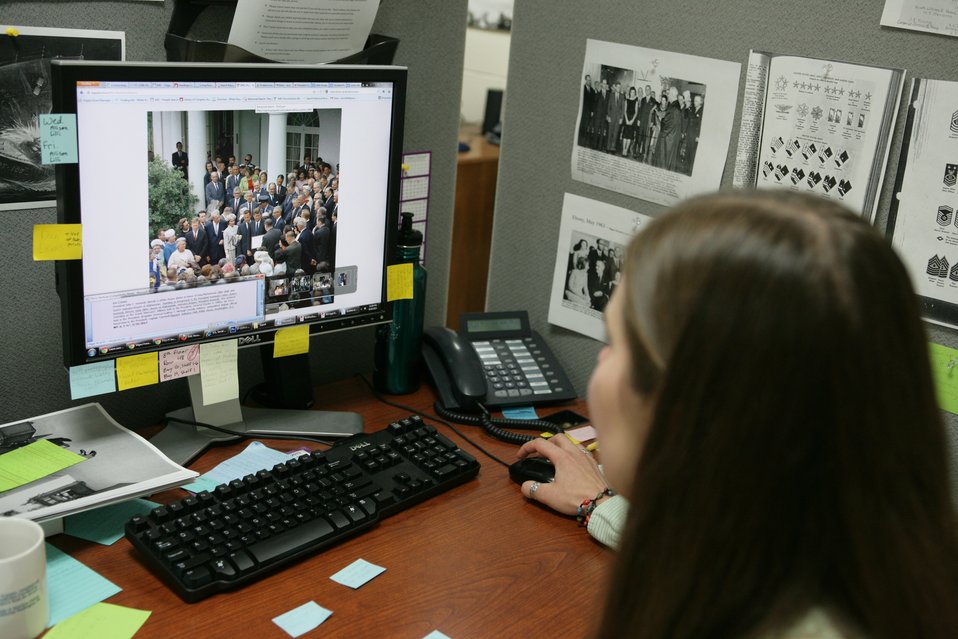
Audiovisual Metadata Cataloger Lindsay Closterman (JFK Library Foundation) works on describing a digitized photograph of President John F. Kennedy, part of the library's initiative to digitize the White House Photographs collection.; Location: John F. Kennedy Presidential Library, Boston, MA